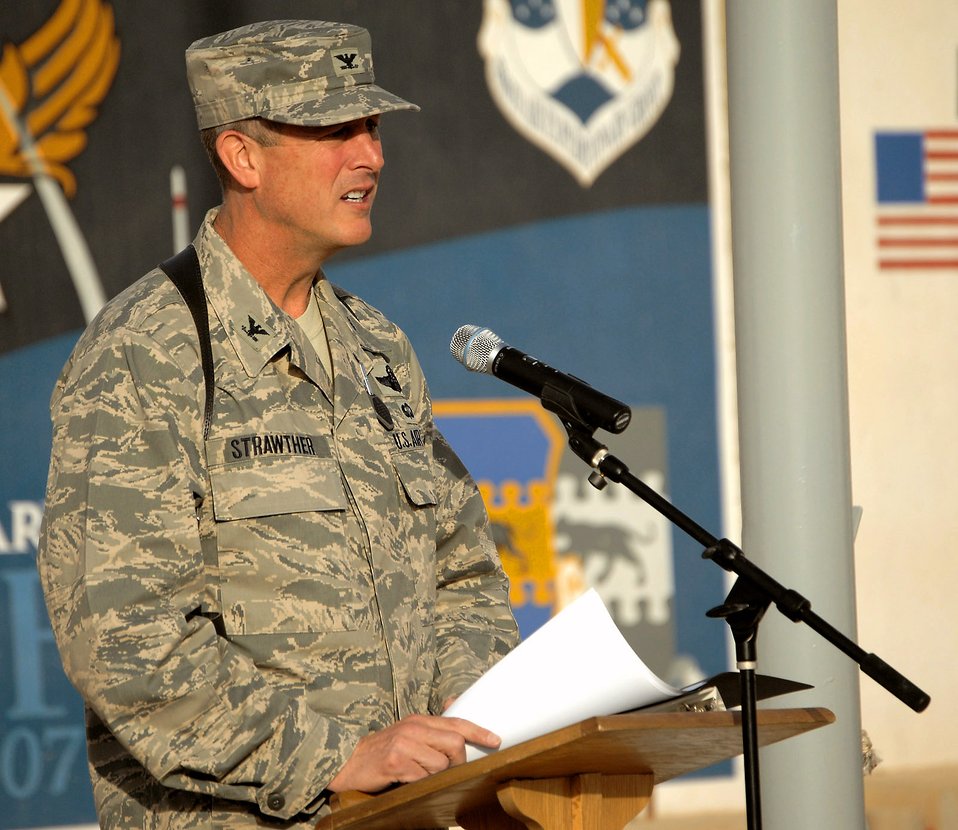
Kirkuk Airmen commemorate 5-year OIF anniversary

Col. Timothy Strawther recites the names of the 42 Airmen who gave the ultimate sacrifice during Operation Iraqi Freedom March 20 at Kirkuk Air Base, Iraq. The speech was part of an event to commemorate the fifth anniversary of Operation Iraqi Freedom. Colonel Strawther is the 506th Air Expeditionary Group commander.